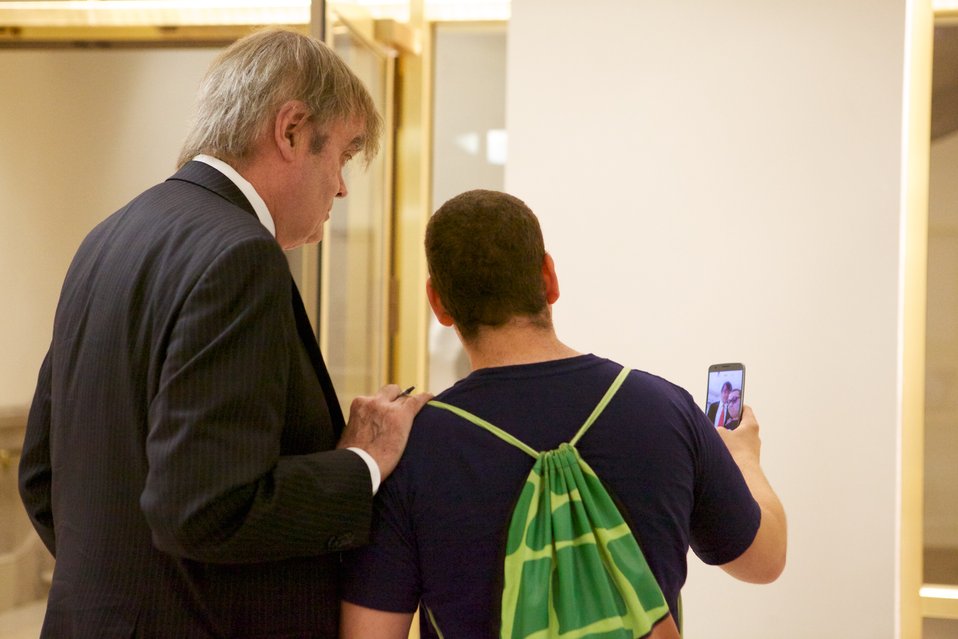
The Keillor Reader